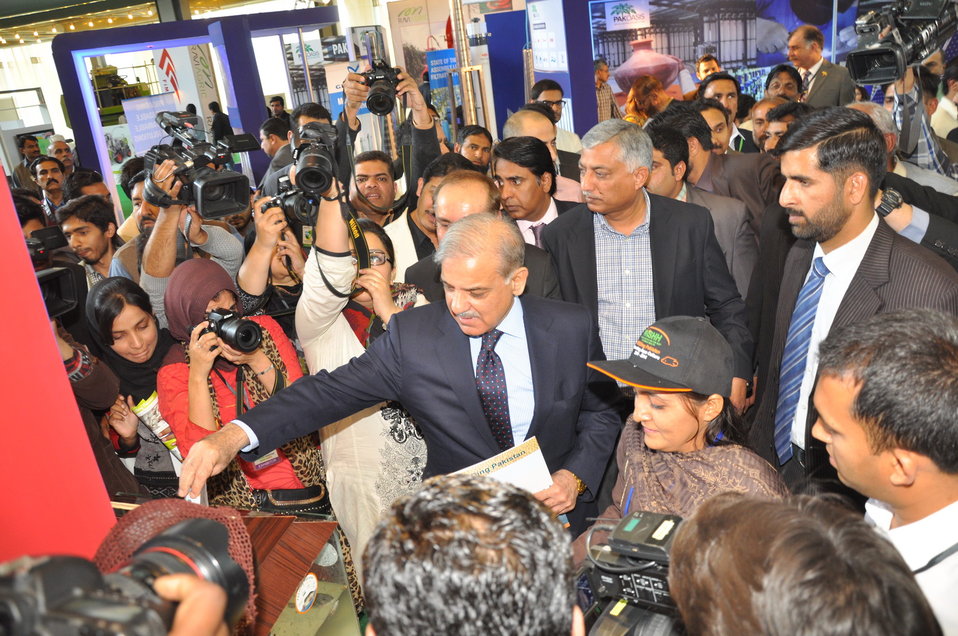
FEEDing Pakistan (ASA/WISHH/USDA)

Mian Shehbaz Sharif, CM Punjab gave soy-based floating feed to Tilapia, Aquaculture Associate in WISHH Cap from Sindh briefed him about the Tilapia culture program development in Pakistan.